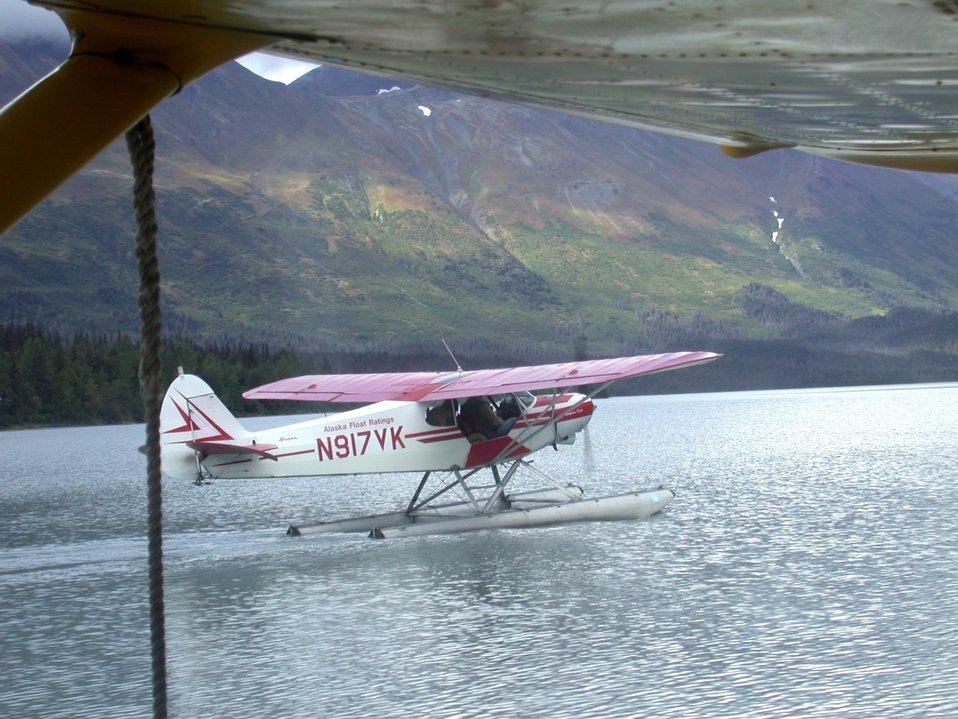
Float plane lake base for sightseeing along the Richardson Highway.